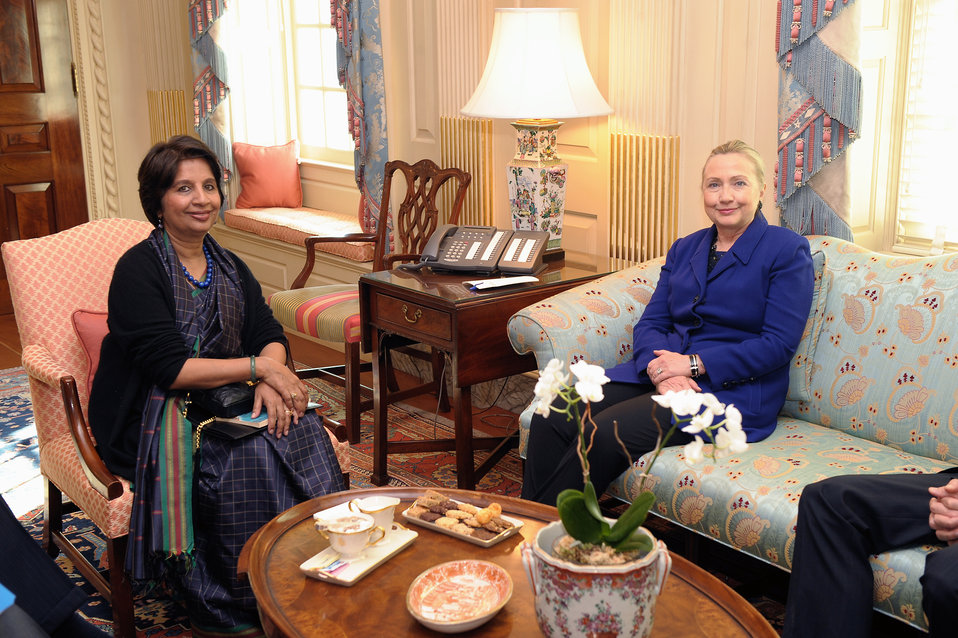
Secretary Clinton Meets With Indian Ambassador Rao

U.S. Secretary of State Hillary Rodham Clinton meets with Indian Ambassador to the U.S. Nirupama Rao at the U.S. Department of State in Washington, D.C., on January 25, 2012.